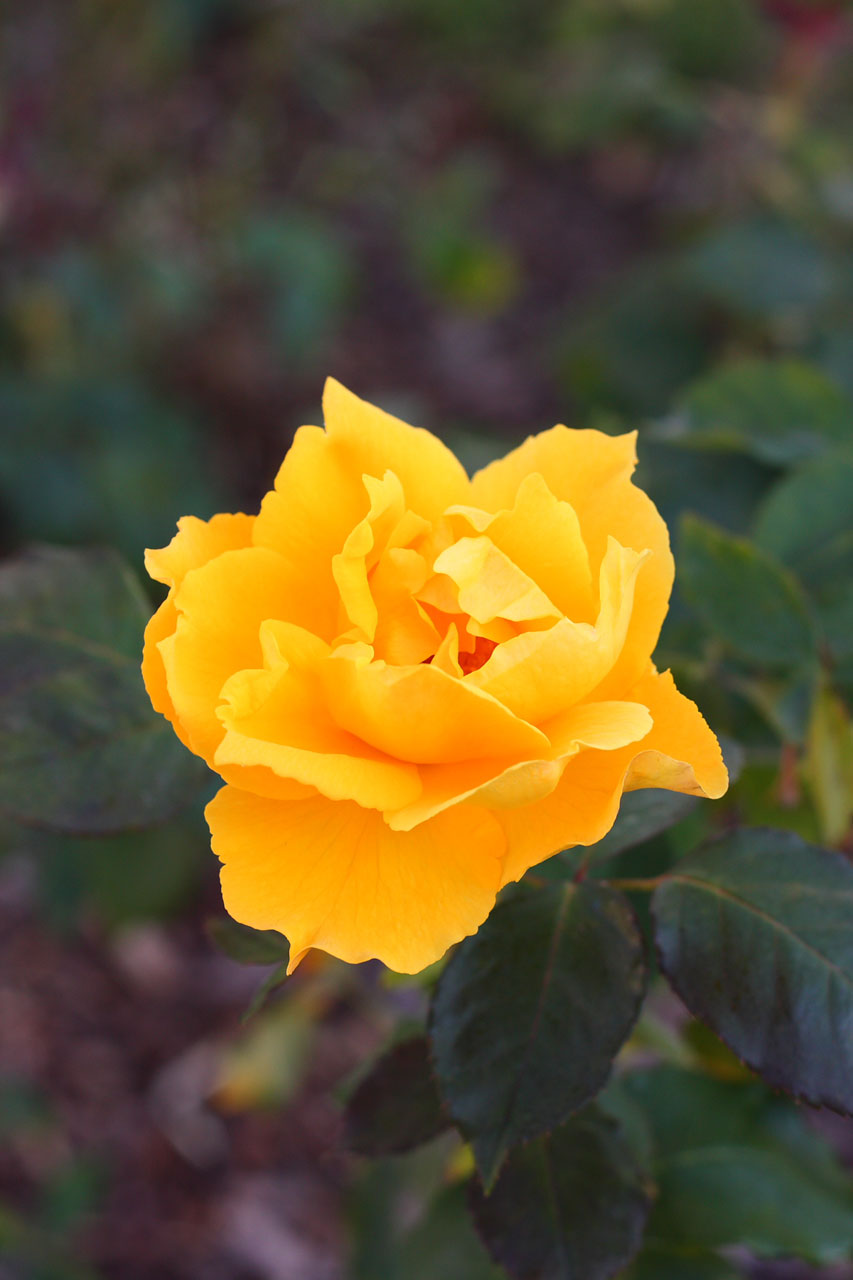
Yellow rose bloom with muted foliage background.